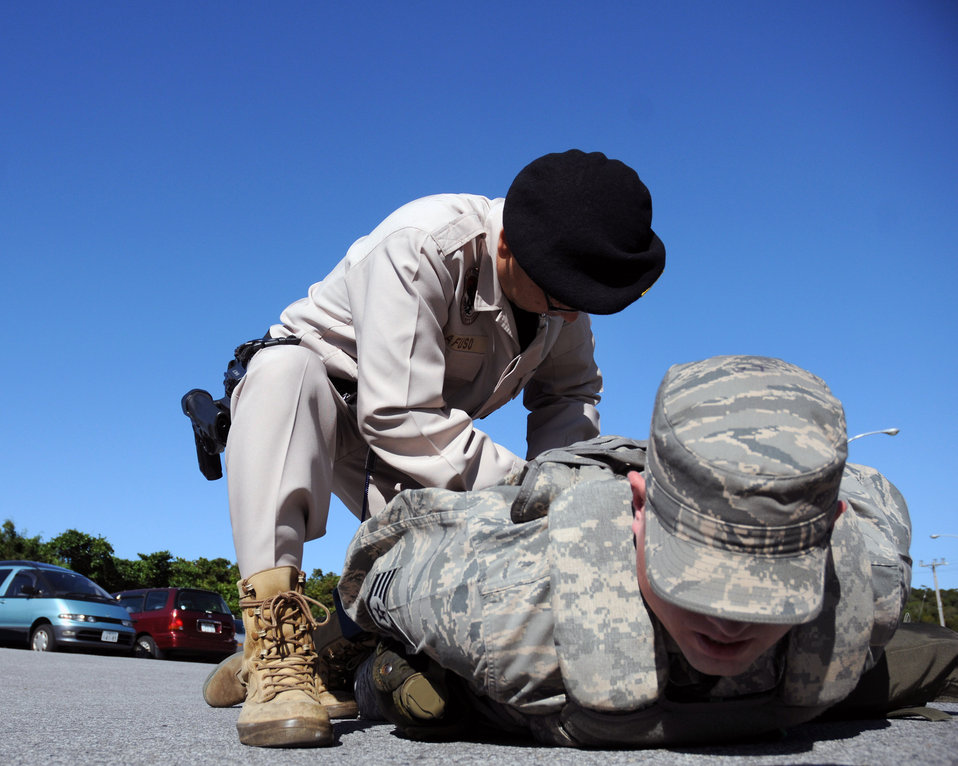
Airmen, Marines join forces during exercise at Kadena

Staff Sgt. James Kipp is apprehended by Makoto Afuso for entering a restricted area without proper identification during an exercise scenario Dec 3 at Kadena Air Base, Japan. Both men are assigned to the 18th Security Forces Squadron. The scenario is part of Exercise Beverly High 09-01, a joint Air Force-Marine Corps exercise designed to test the ability of both services to execute their critical missions under simulated combat conditions.